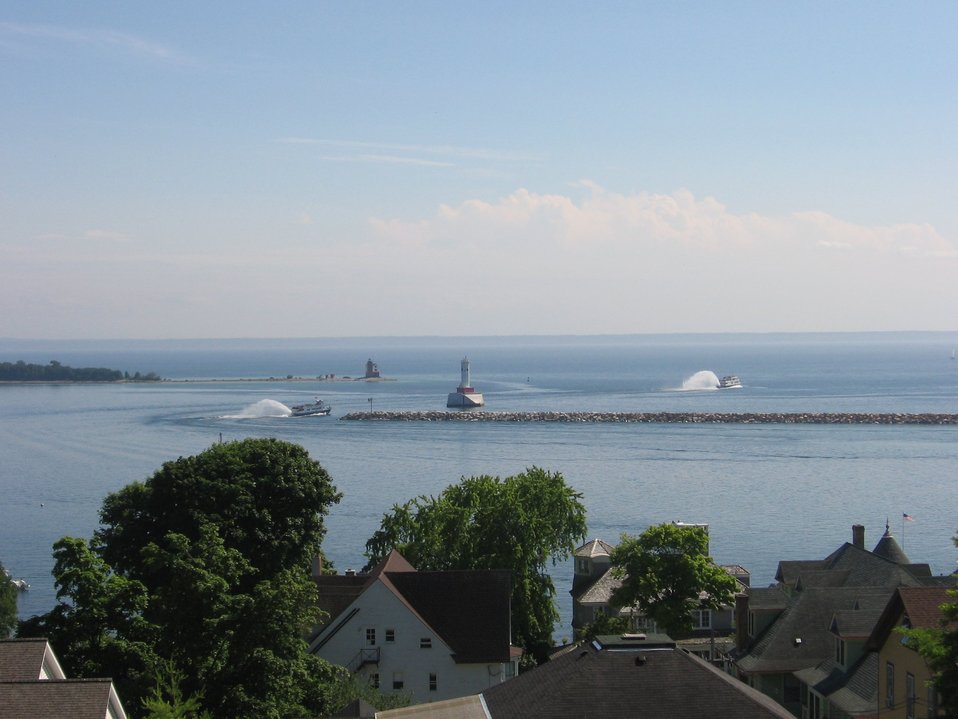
Straits of Mackinac, Mackinac Island